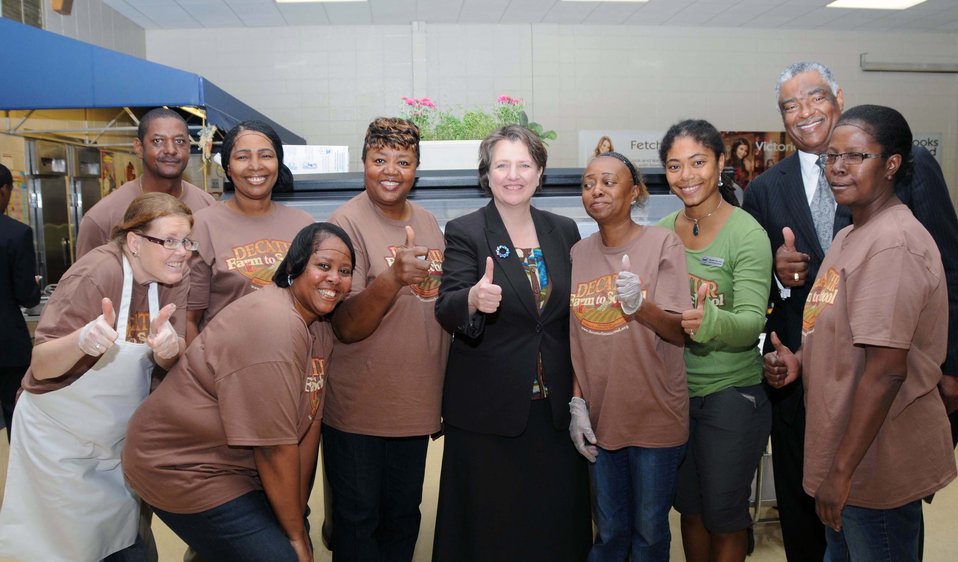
Agriculture Deputy Secretary Kathleen Merrigan and FNS Southeast Regional Administrator Donald Arnette give a thumbs up with the cafeteria nutrition staff while visiting Carl G. Renfroe Middle School in Decatur, GA, during National School Lunch Week and Farm to School Month on Friday, October 14, 2011.